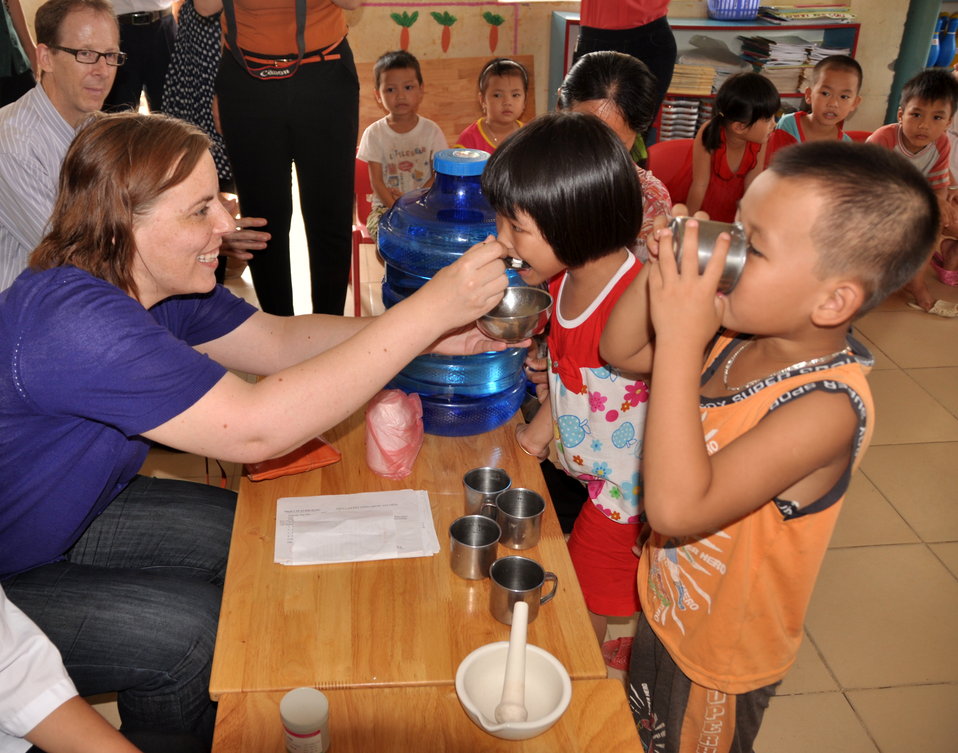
USAID Delivers Deworming Medication to Kindergartners in Nam Dinh Province

Children of Vietnam's Nam Dinh Province receive deworming medicine in a program supported by USAID and World Vision Australia.
June 1, 2013